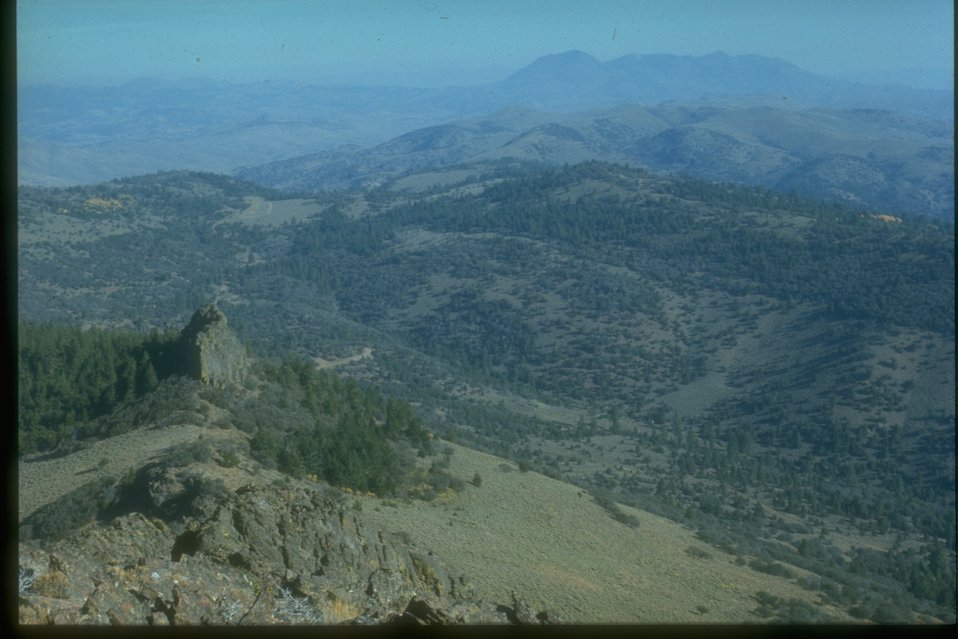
Scenic overlook looking down to scattered forest lands and Castle Rock.